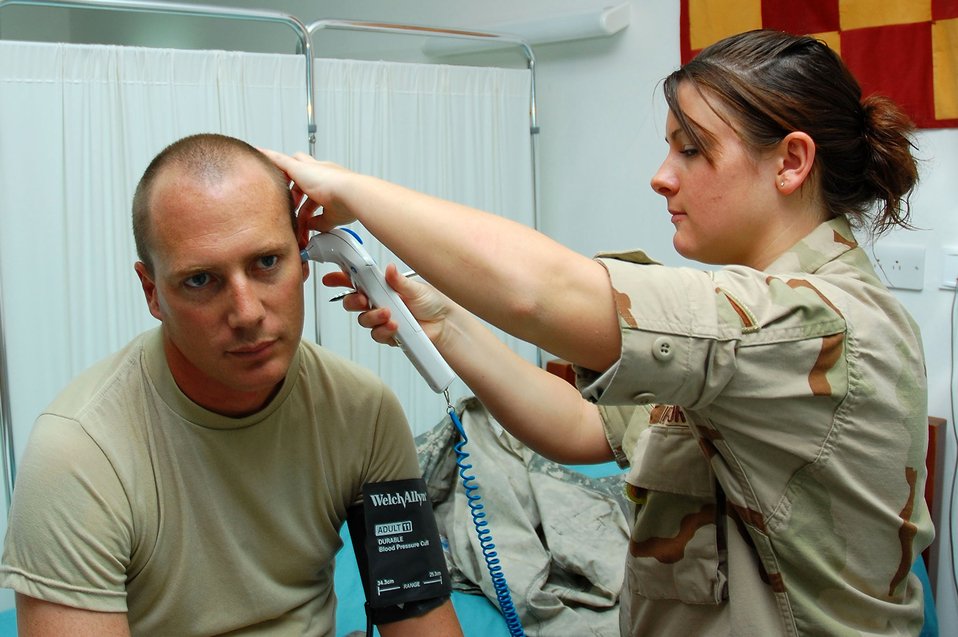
Airmen keep Soldiers, Marines in the fight

Senior Airman Elle Liza Marie Franz conducts a vital check on Army patient Sgt. Scott Boomershire at the Contingency Aeromedical Staging Facility Sept. 24 in Southwest Asia. The CASF is a 24-hour medical holding and staging facility, which averages about 300 patients per month. Airman Franz is a 386th Expeditionary Medical Group medical technician.